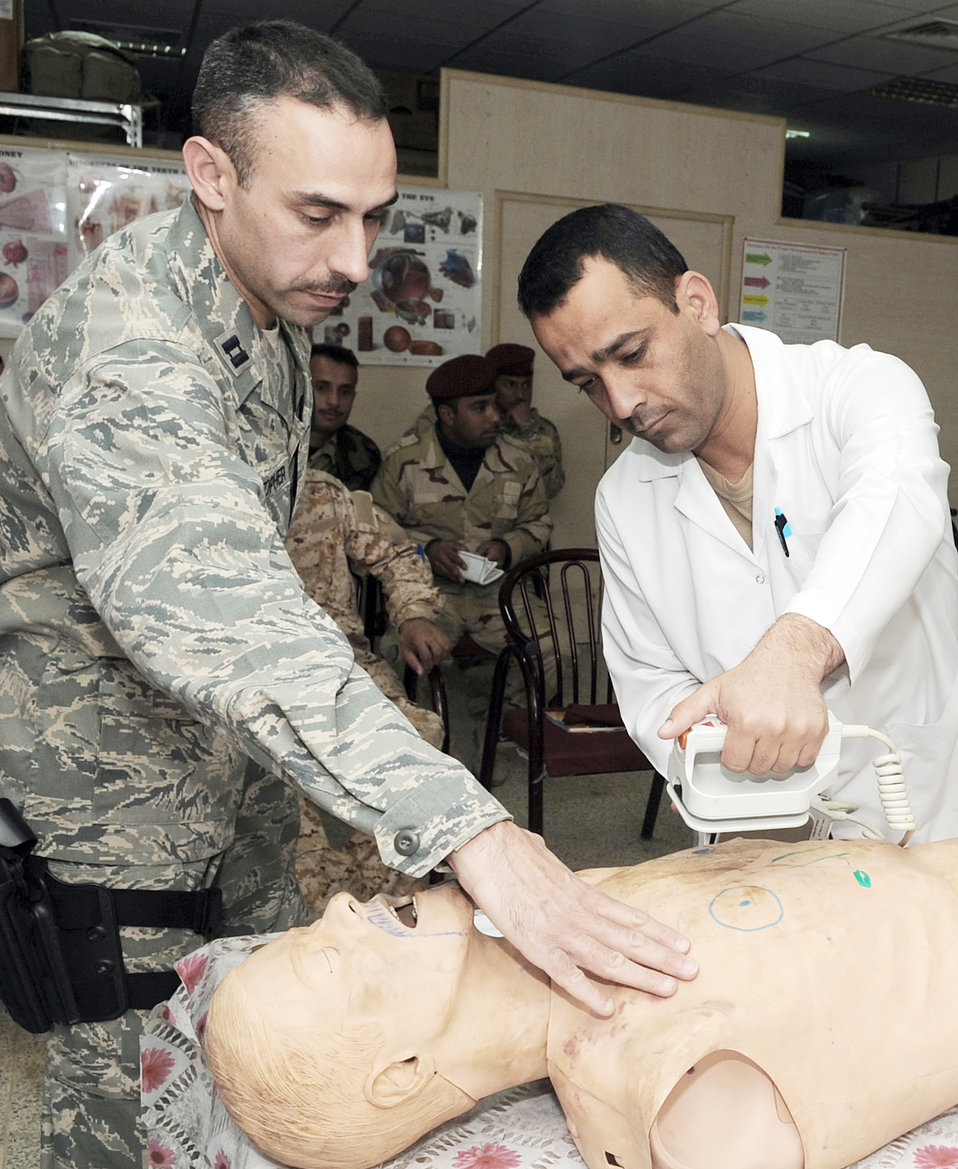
Kirkuk Airmen train Iraqi medics

Capt. Adam Christopher and Staff Sgt. Andrew Salas teach Iraqi medics how to use a defibrillator Feb. 16, 2010, at Kirkuk Air Base, Iraq. This training is part of the Expert Field Medical Batch four-week course offered to Iraqi medics at the K-1 Iraqi medical clinic in order to provide the experience they will need in real-world situations. Captain Christopher and Sergeant Salas are assigned to the 506th Expeditionary Medical Squadron.